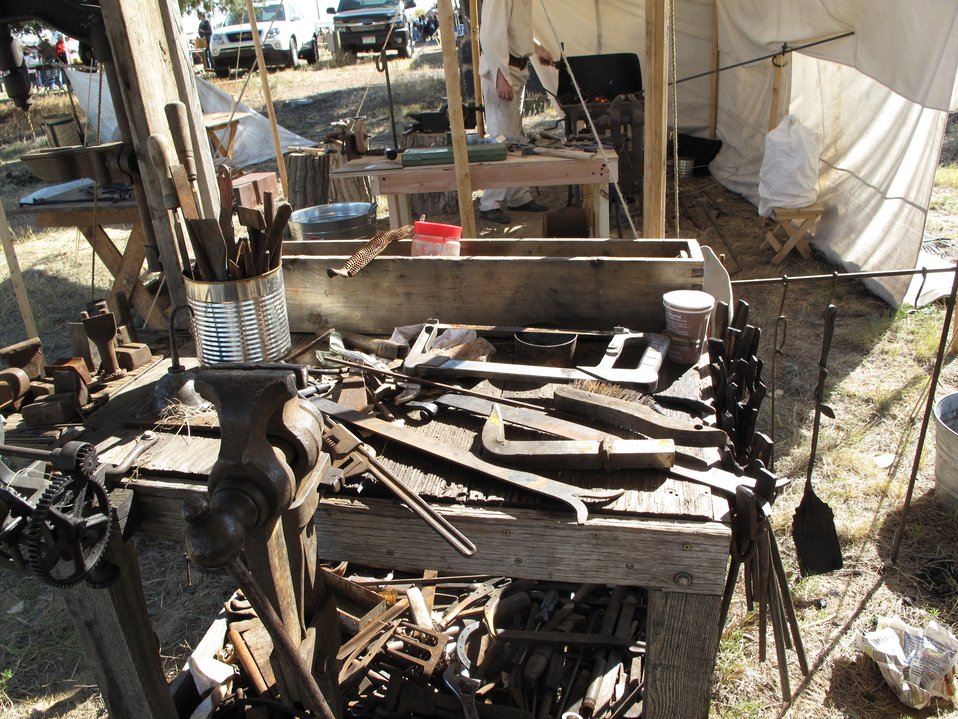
Refuge Round-Up 2010

All the great tools they make.